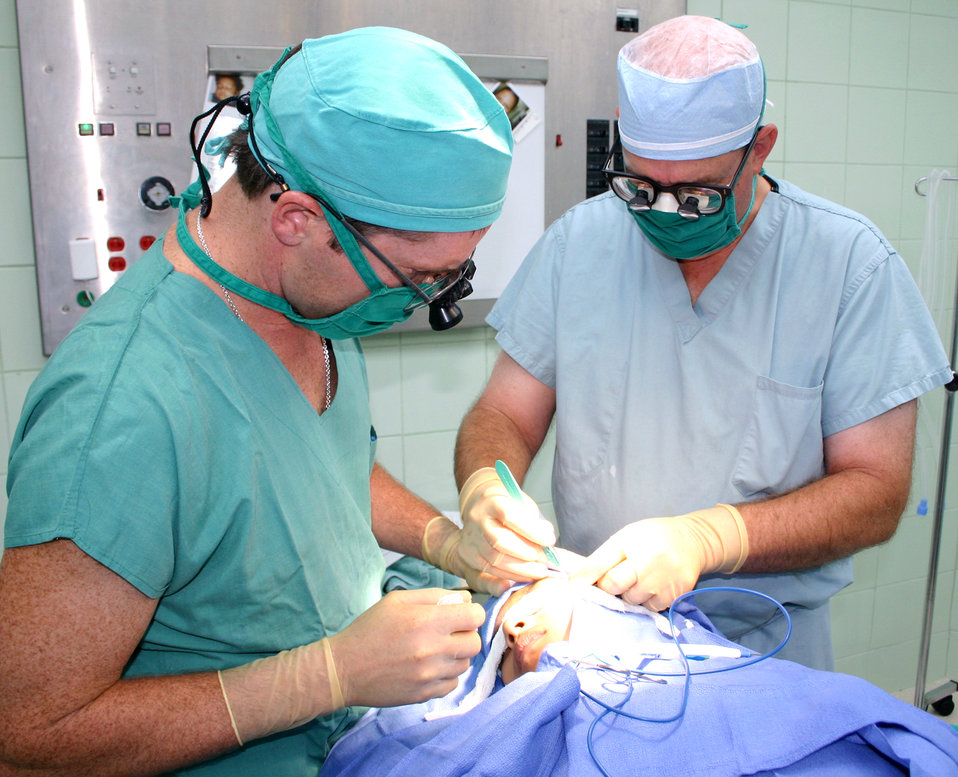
Medical team conducts mission in Ecuador

Maj. (Dr.) Matthew Talarczyk (left) and Col. (Dr.) Charles Hardin perform a scar revision procedure on a 15-year-old Ecuadorian girl in Esmereldas, Ecuador. The two surgeons are members of the Medical Readiness Training Exercise team from Wilford Hall Medical Center at Lackland Air Force Base, Texas.